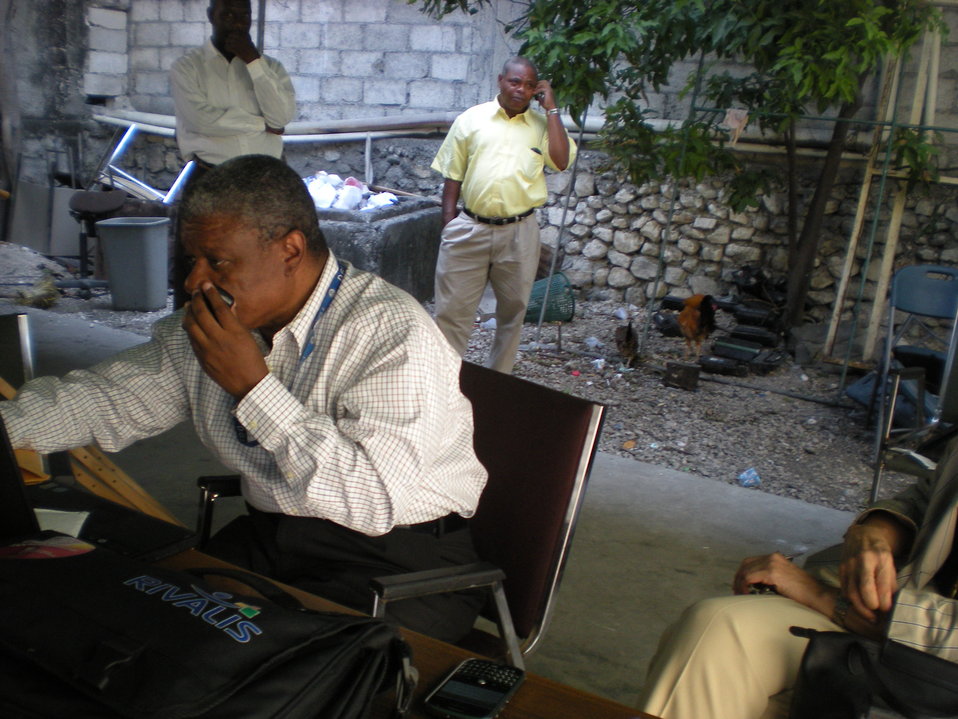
Haiti, One Year Later

Staff of the DGI, Haiti’s tax administration, carry on their work after their office building was destroyed and their director killed in the earthquake. Treasury’s Office of Technical Assistance plans to establish a long-term presence through a team of experts to assist the relevant ministries in strengthening public finances, financial accountability, debt management and reinforcing the insurance sector. This cooperation will strengthen the capacity of the Haitian government to better manage its revenues and dedicate resources to priority areas for reconstruction, while improving the financial sector’s ability to provide credit to the private sector in support of long-term economic development.